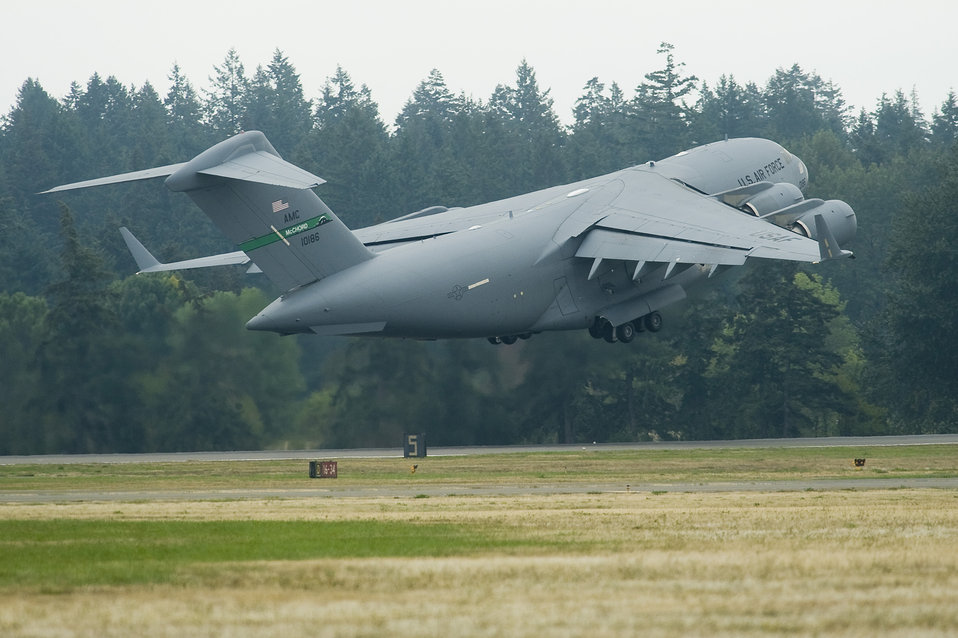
McChord Airmen head for 'the ice' as Operation Deep Freeze season kicks off

A C-17 Globemaster III takes off headed to Antarctica for missions in support of Operation Deep Freeze Sept. 24, 2009, at McChord Air Force Base, Wash.